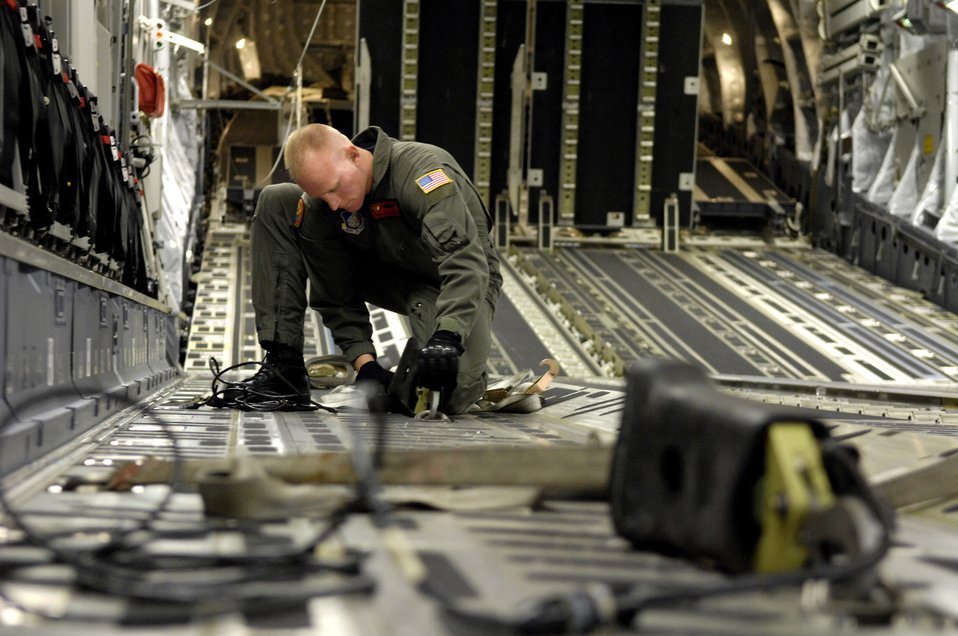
Airlift training

Tech. Sgt. Ansen Lucas connects a gate release mechanism in the cargo bay of a C-17 Globemaster III before an airdrop training mission July 16 at Hickam Air Force Base, Hawaii. Sergeant Lucas is a loadmaster with the 535th Airlift Squadron.